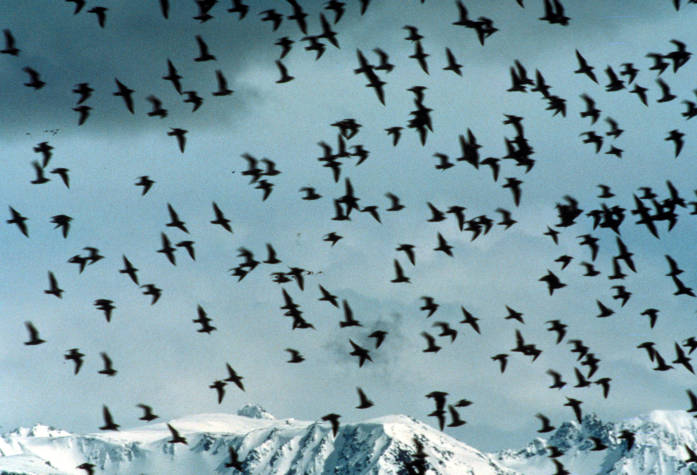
Shorebird flock, Kachemak Bay Shorebird Festival, Homer